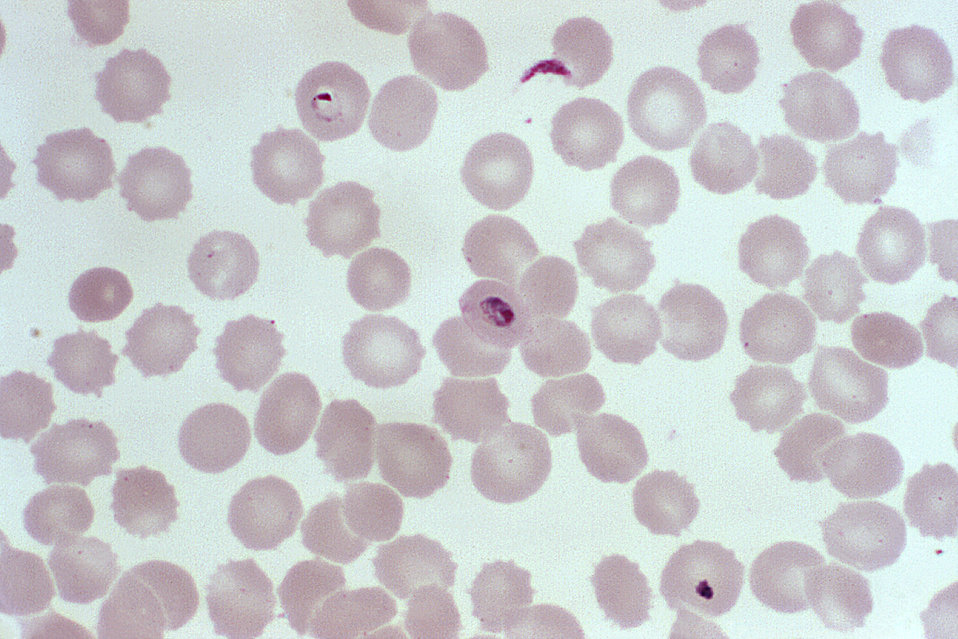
A photomicrograph of a blood smear with ring stage Plasmodium falciparum infected blood cells.